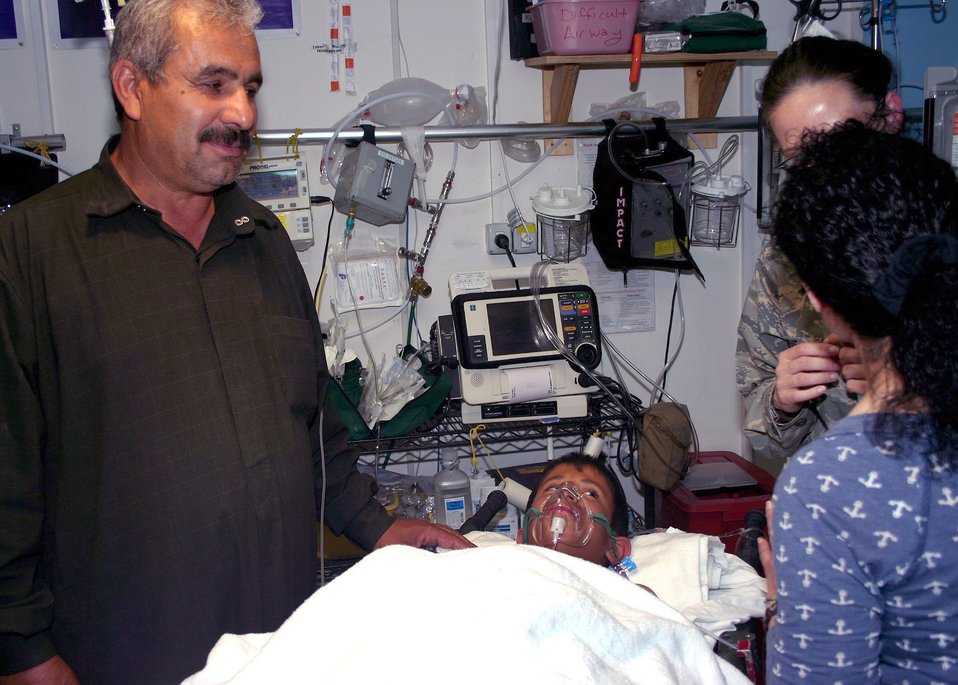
Soldiers, Airmen save Iraqi teen injured by bomb

An Iraqi teenager and his father are informed about his treatment through an interpreter at Forward Operating Base Rahmey Jarew, an Iraqi teenager, and his father, Arif Muter Jarew, speak to a doctor about his treatment through an interpreter at Forward Operating Base Warrior in Kirkuk, Iraq, March 27. An improvised explosive device injured the teenager earlier that day. The quick response of Army and Air Force members saved the boy's life.